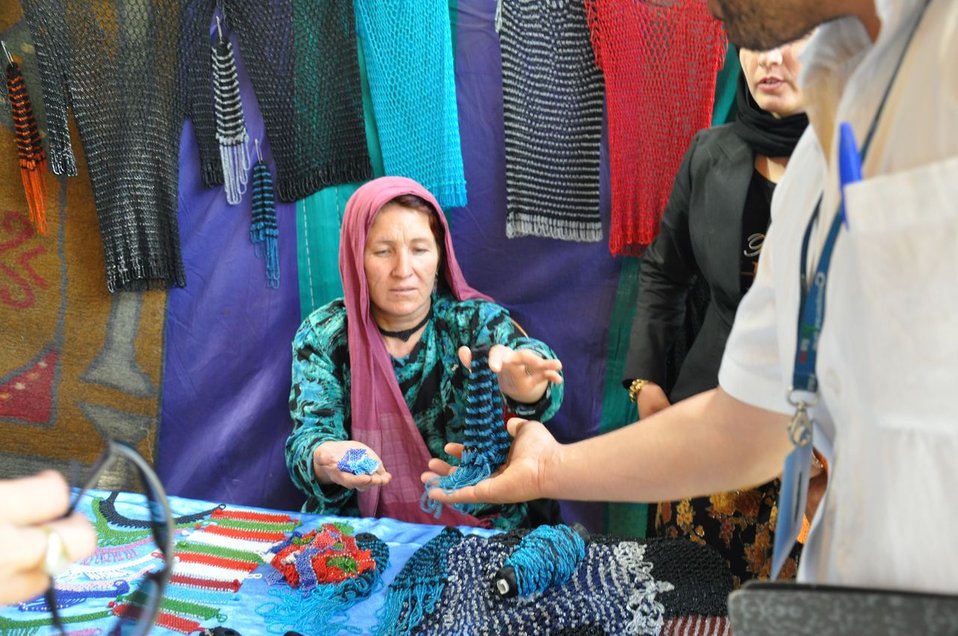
Mother's Day in Afghanistan